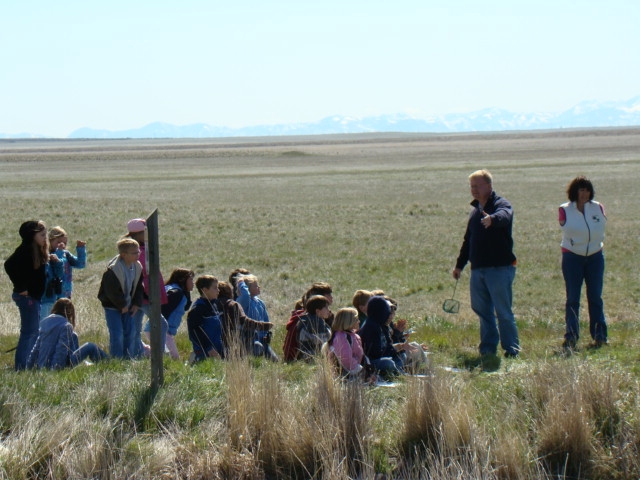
Benton Lake National Wildlife Refuge

Apart of the local third grader curriculum is to come out to the refuge and learn about wetlands and grasslands. They collect aquatic inverts and learn how to identify various birds.